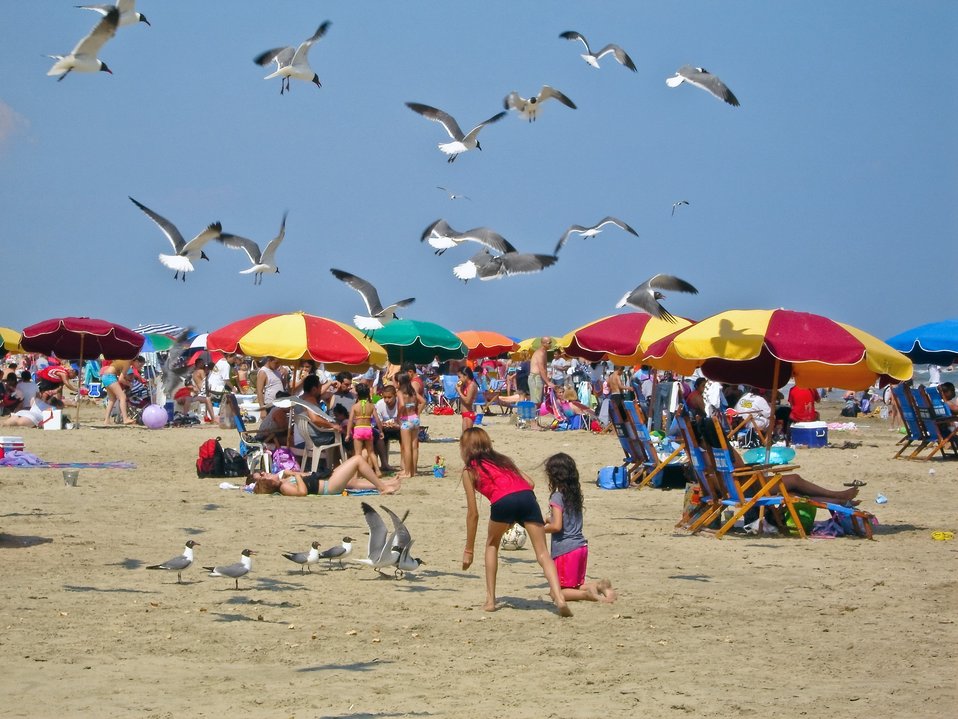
Feeding seagulls, Texas